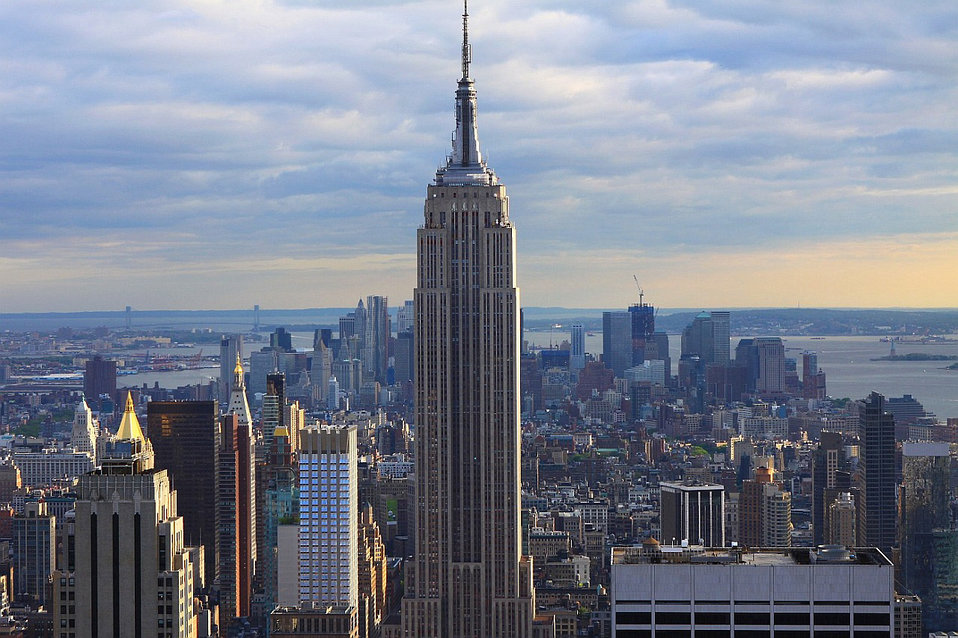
Empire state building

Seen from top of the rock.